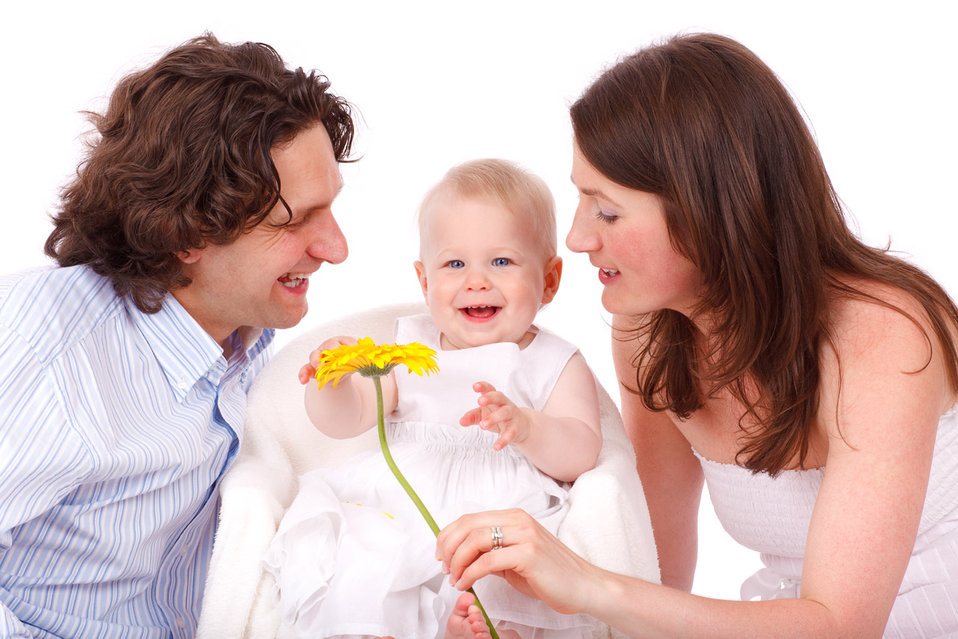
Proud parents

Mother and father looking at their daughter with yellow flower isolated on white background.